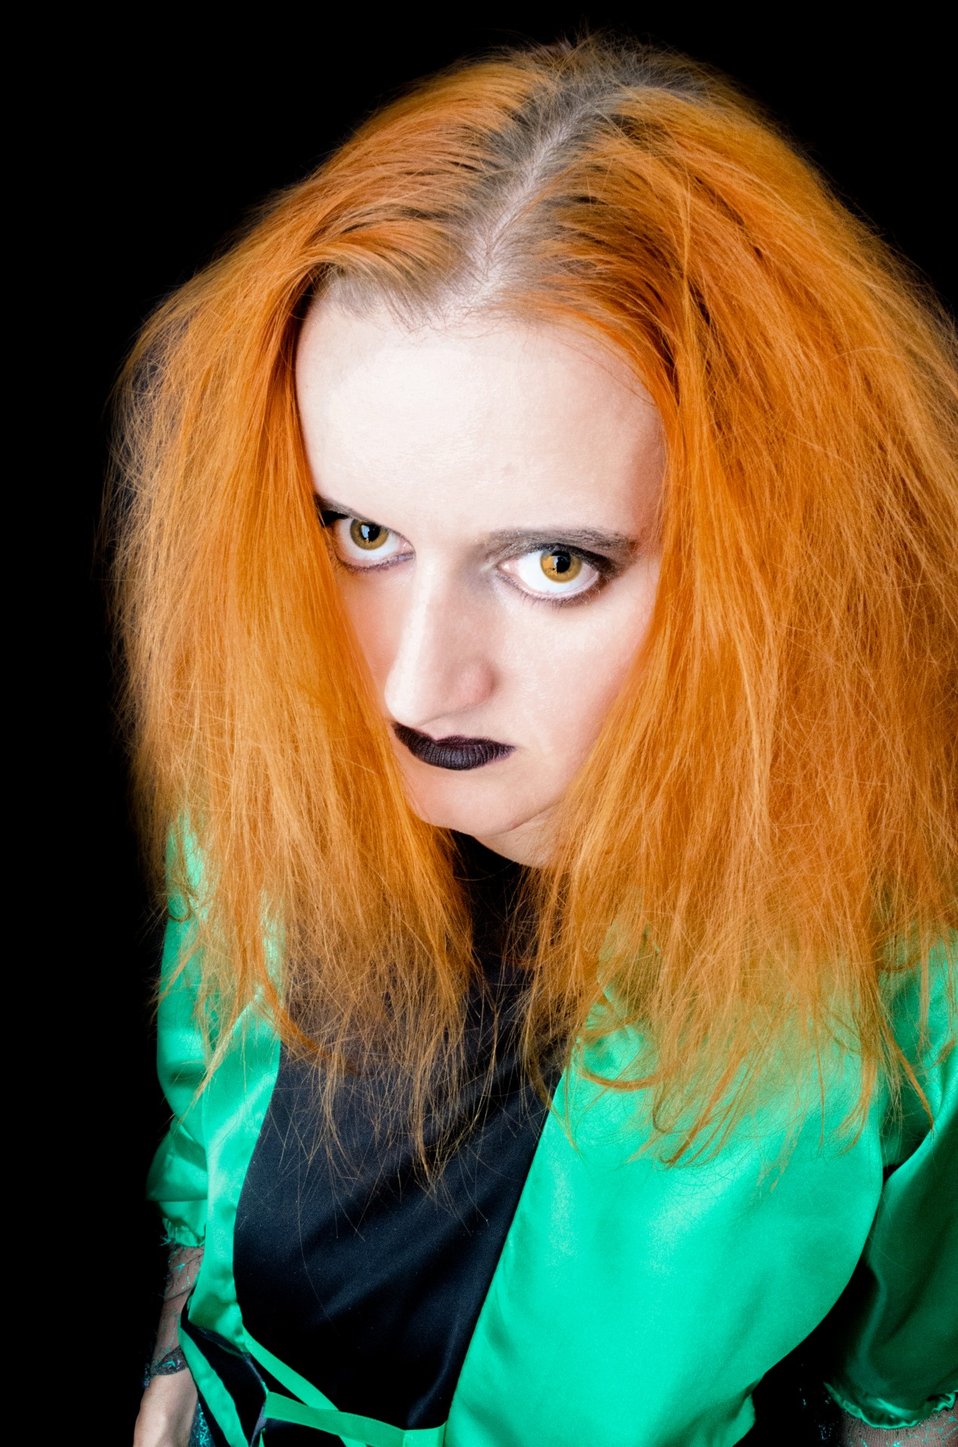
Halloween witch.